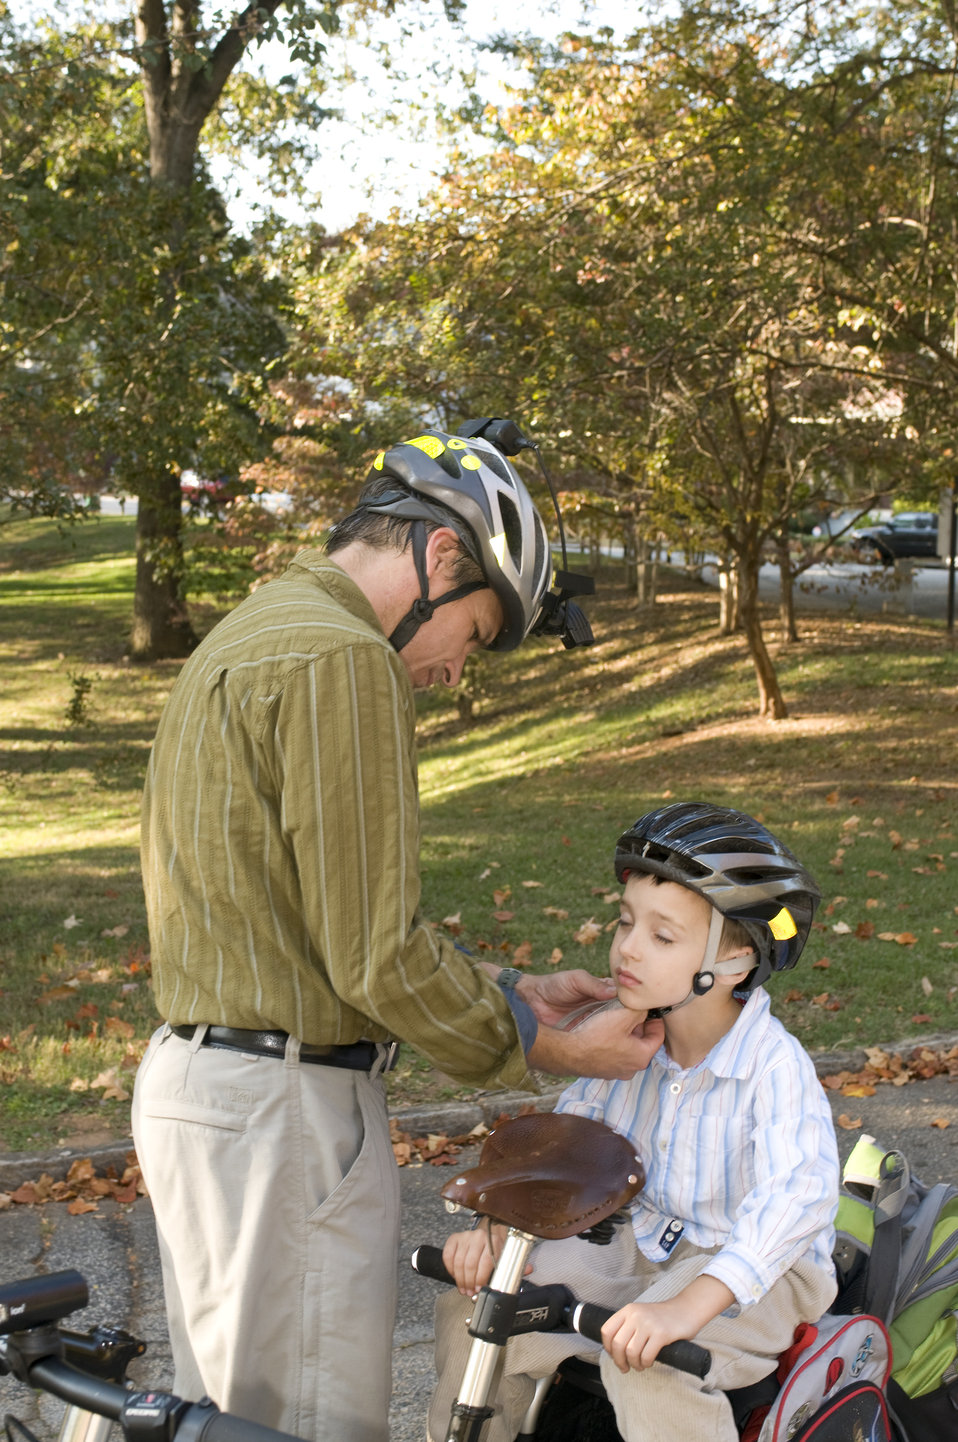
This photograph depicts a father and son about to embark on a beautiful Georgian afternoon bicycle ride. At this point in their preparation, after dad had secured his own protective helmet, he was in the process of securing his daughter's helmet by adjusting the straps below her chin. These high-tech helmets are aerodynamic, and permit a cooling flow of air to reach the wearer's scalp, and are very light-weight as well.